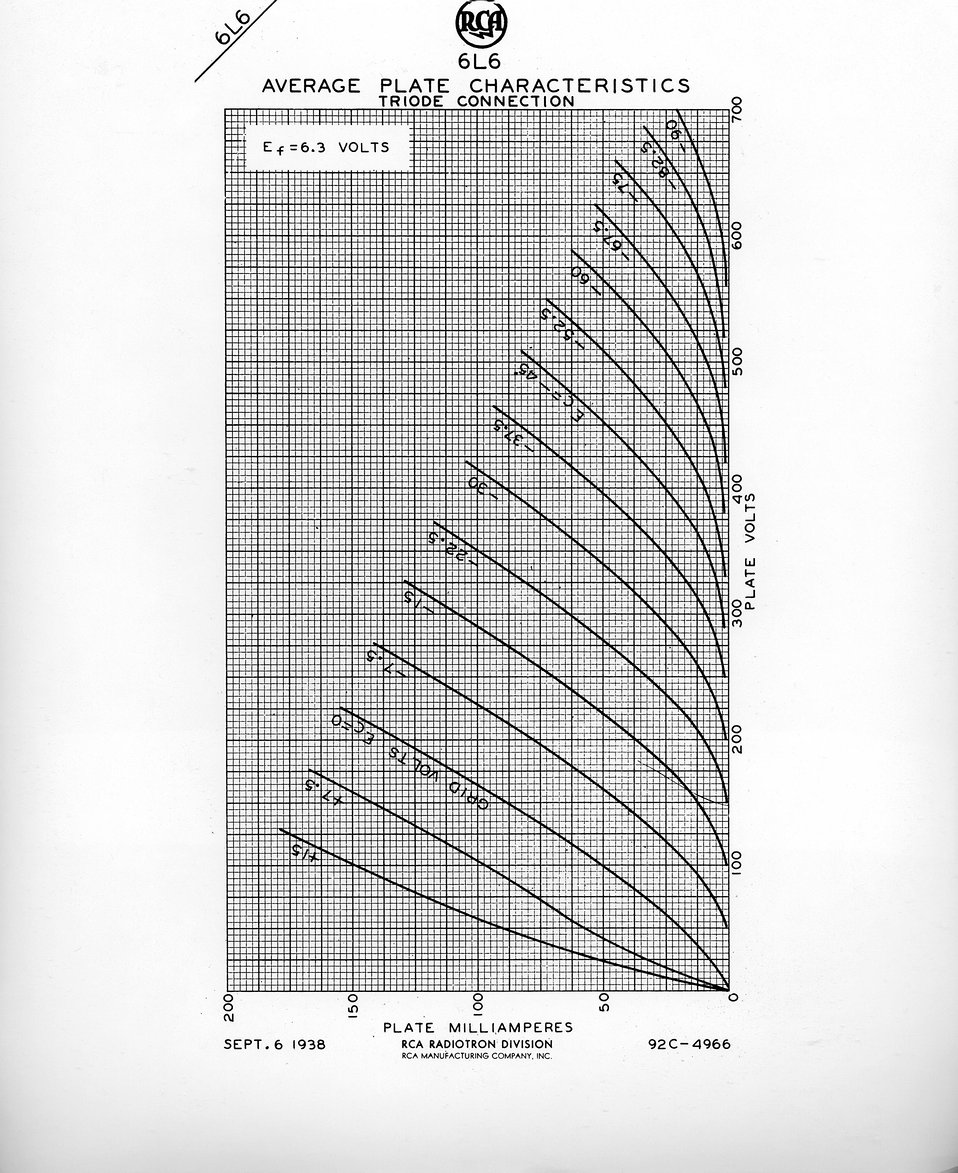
A picture of the plate characteristics of a triod connected 6L6 vacuum tube. c. 1949